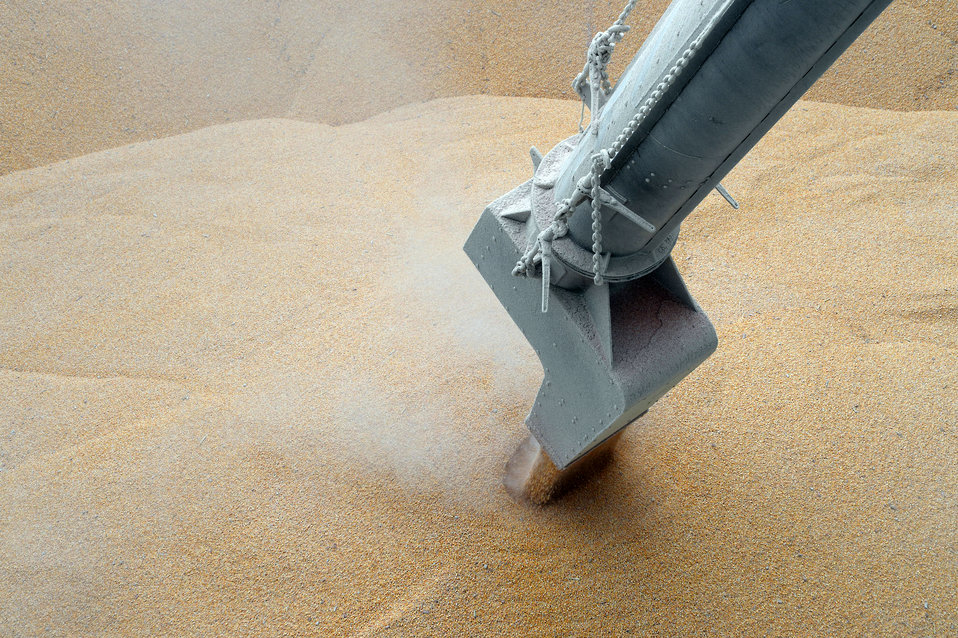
Grain is transferred from barges to storage facilities near the Port of New Orleans in New Orleans, LA on Tuesday, Nov. 19, 2013.